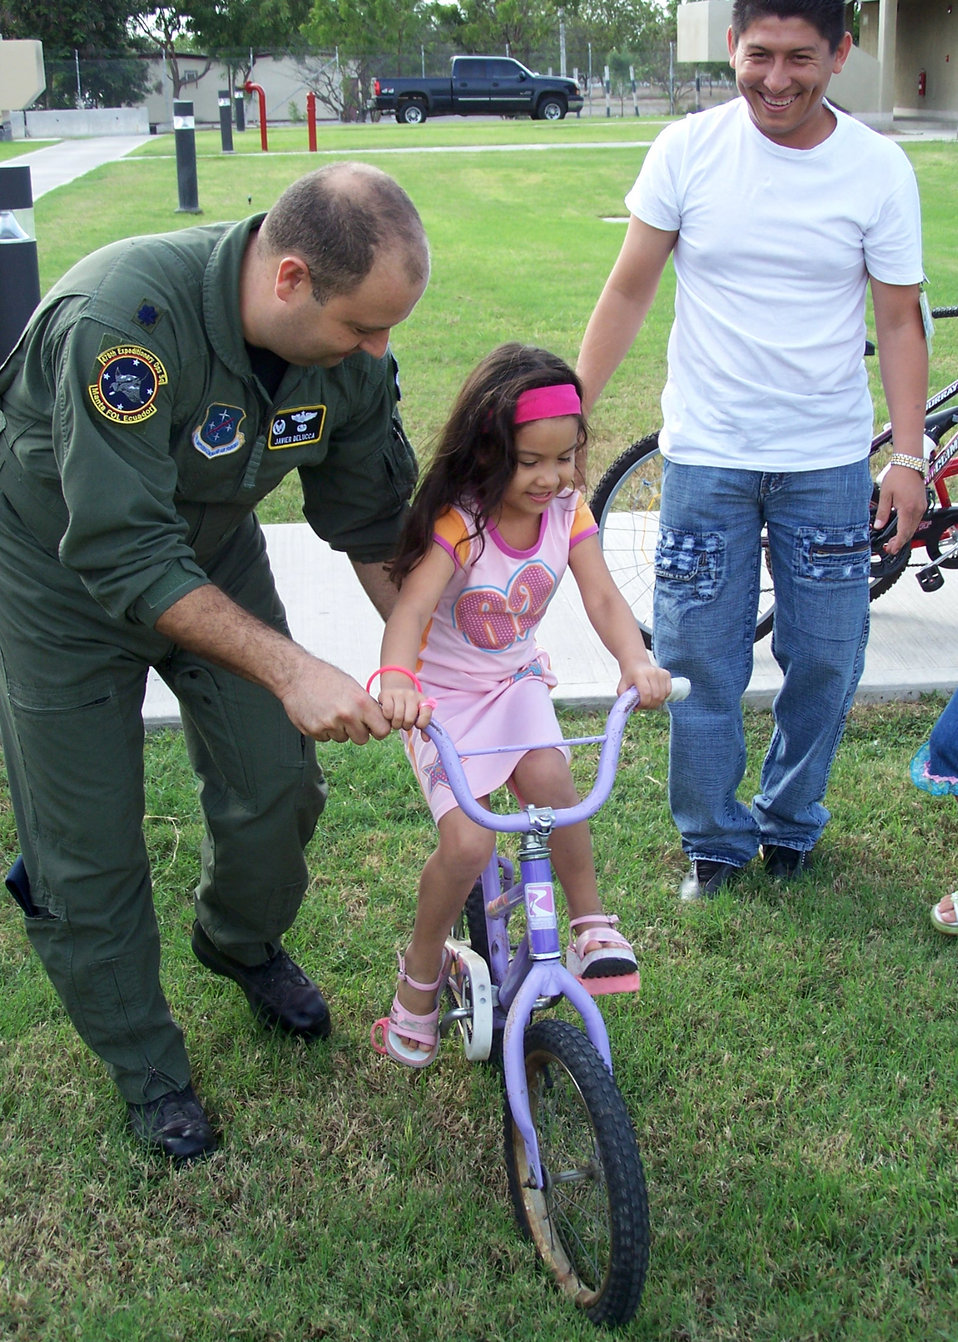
Bicycles for Kids

Lt. Col. Javier Delucca helps a girl try out her new bicycle while her father looks on.